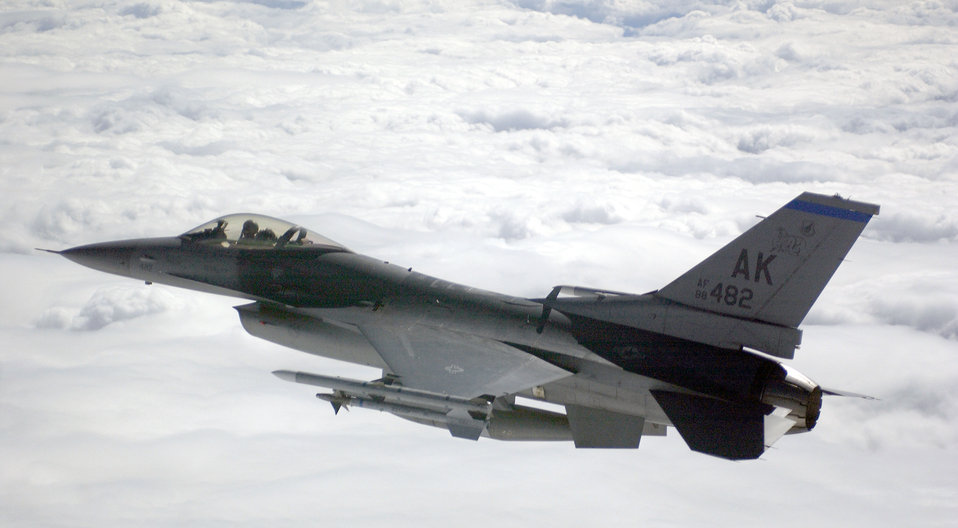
A cloudy day

OVER EIELSON AIR FORCE BASE, Alaska -- An F-16C Fighting Falcon aircraft from the 18th Fighter Squadron flies during a training mission here July 27.